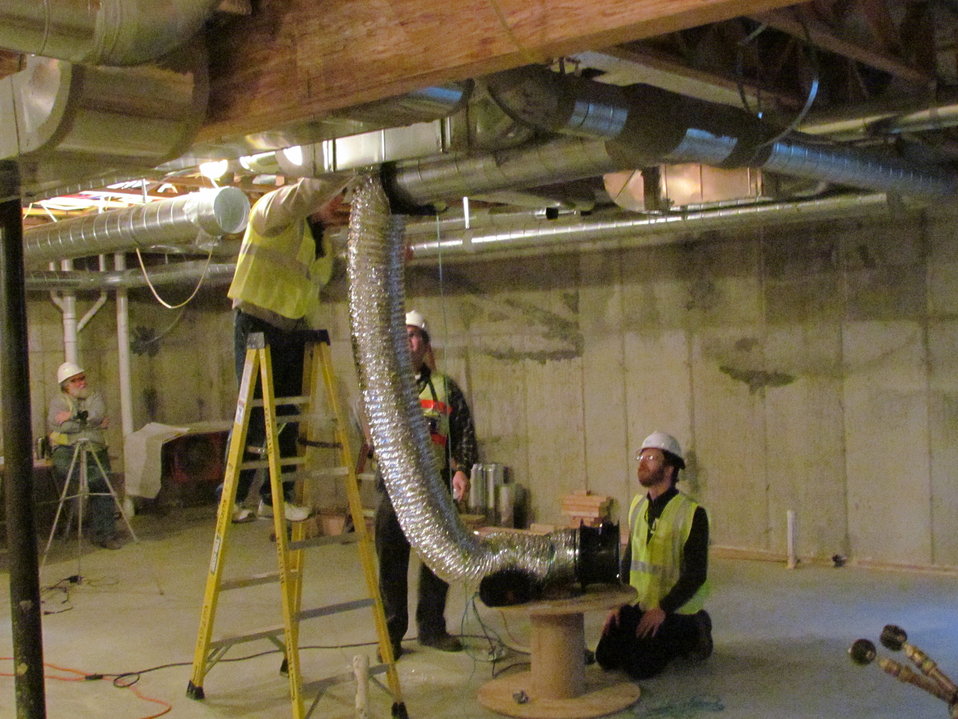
Net-Zero Energy Residential Test Facility – Photo showing workers measuring the air leakage in various duct runs throughout the facility.